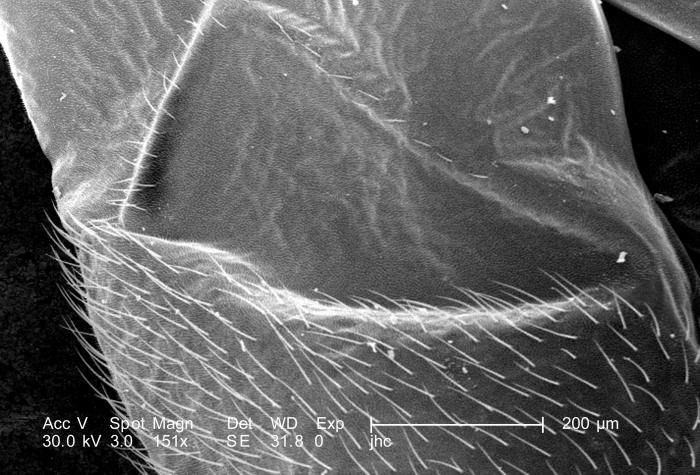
At a low magnification 151X, this scanning electron micrograph (SEM) depicted some of the morphologic details found on the wing surface of an unidentified 1/4"-sized black flying insect with a small red mark on its dorsum, discovered in the suburbs of Decatur, Georgia. As a member of the Phylum Arthropoda, i.e., Arthro = 'jointed', and poda 'leg', this insect sported three pairs of jointed legs, which placed it into the Family, Insecta>. Note that PHIL 9908, 9909, and 9910 are sequentially higher, and higher magnifications of this surface.